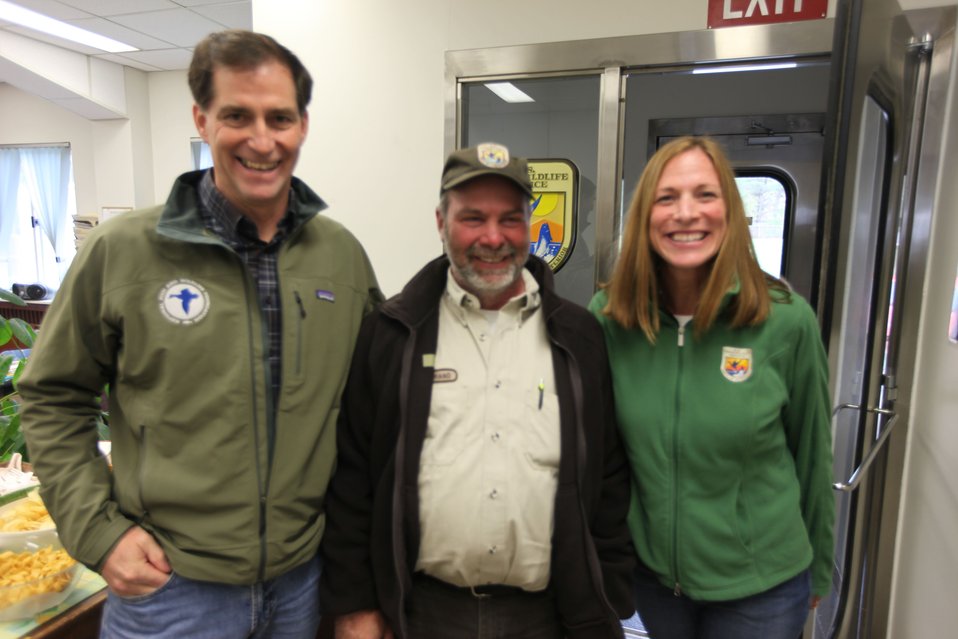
Dan Ashe, Joe Bertrand & Wendi Weber

U.S. Fish & Wildlife Service Director Dan Ashe visits the Northeast Region
for a tour of the White River National Fish Hatchery in Bethel, Vermont on
April 27, 2012. The hatchery was devastated by Tropical Storm Irene and
Dan Ashe had the chance to meet and thank the staff for their heroic work.
Director Ashe also visited restoration/flood response/fish passage project
sites in Rochester, Vermont and met with local officials and staff from the
White River Partnership.